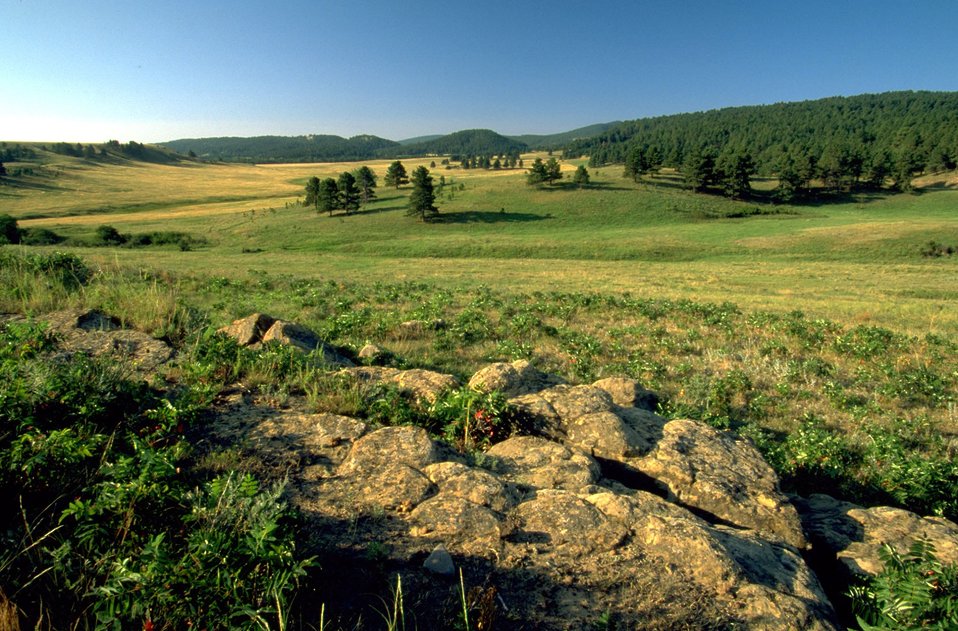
South end of Fort Meade near Cavalry Jumps